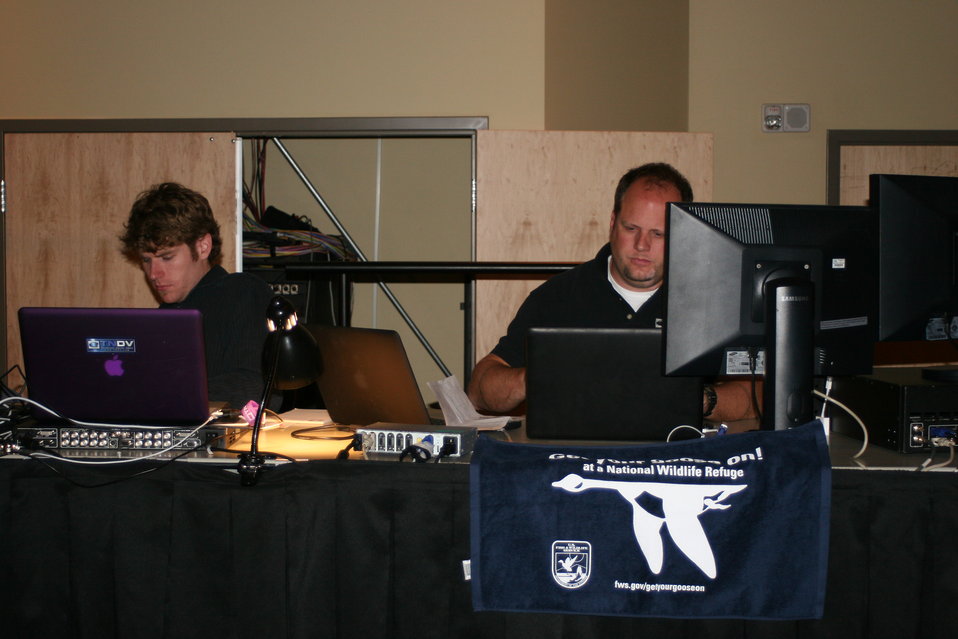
Get your goose on!

Photo Credit: Suzanne Fellows / USFWS
The U.S. Fish & Wildlife Service sponsored the 2012 Federal Duck Stamp Art Contest September 28 and 29 in Ogden, Utah, at Weber State University. A panel of five judges was responsible for choosing the art work used to design the 2013-2014 Migratory Bird Hunting and Conservation Stamp.